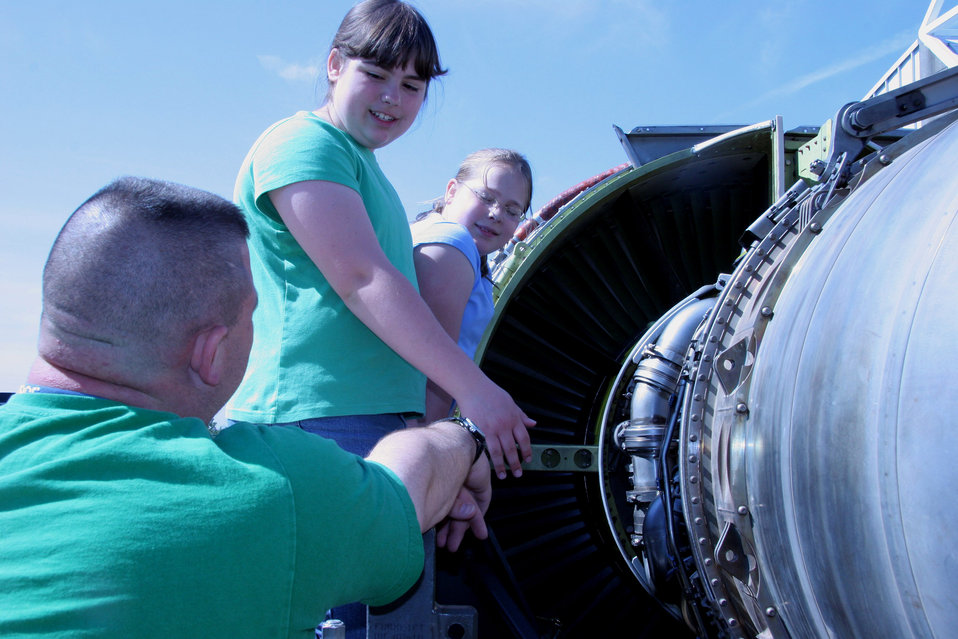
Take Our Daughters and Sons to Work Day

Tech. Sgt. Brian Flott explains the engine of the KC-135 Stratotanker to his daughters Brianna (center) and Sabrina during Take Our Daughters and Sons to Work Day at the 939th Air Refueling Wing in Portland, Ore., on Thursday, April 27, 2006. Sergeant Flott is a crew chief with the 939th Aircraft Maintenance Squadron.